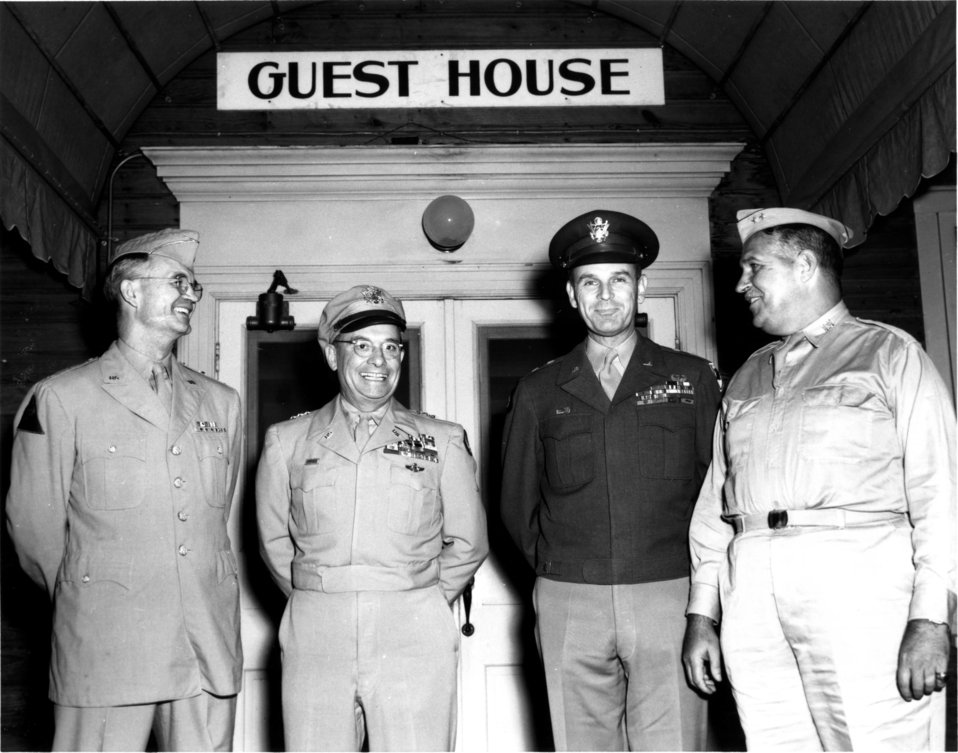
Notable persons at Oak Ridge